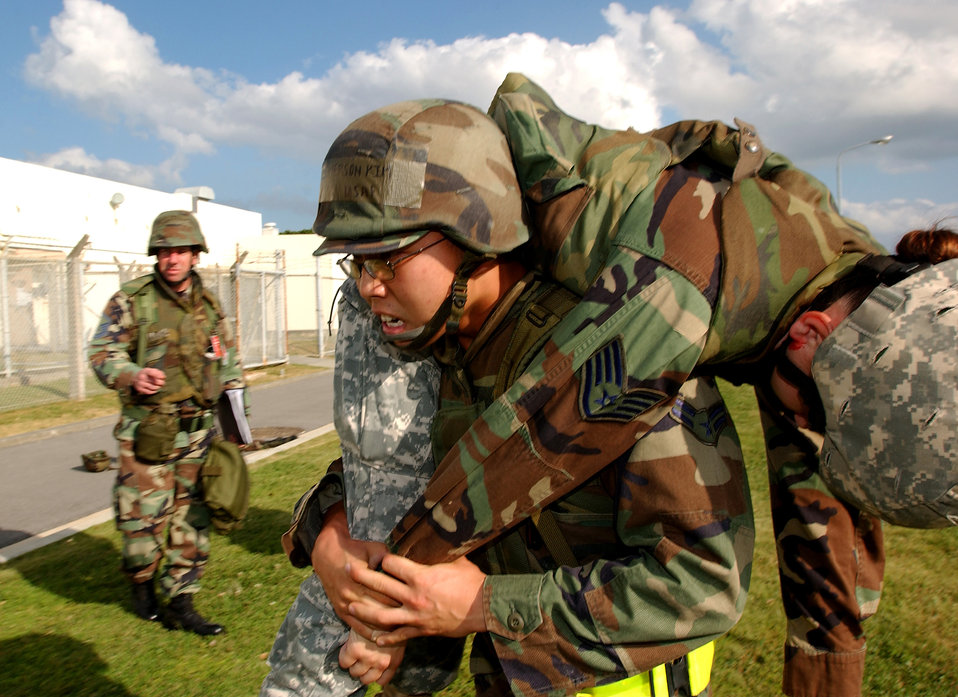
Lifesaving training

Airman 1st Class Emerson Kim carries an injured Airman during a simulated fire explosion at Kadena Air Base, Japan, Oct. 24. The mass casualty scenario helped Airmen train on treating wounds and applying basic life-saving steps during the Local Operational Readiness Exercise Beverly High 08-1. Airman Kim is assigned to the 18th Communications Squadron.